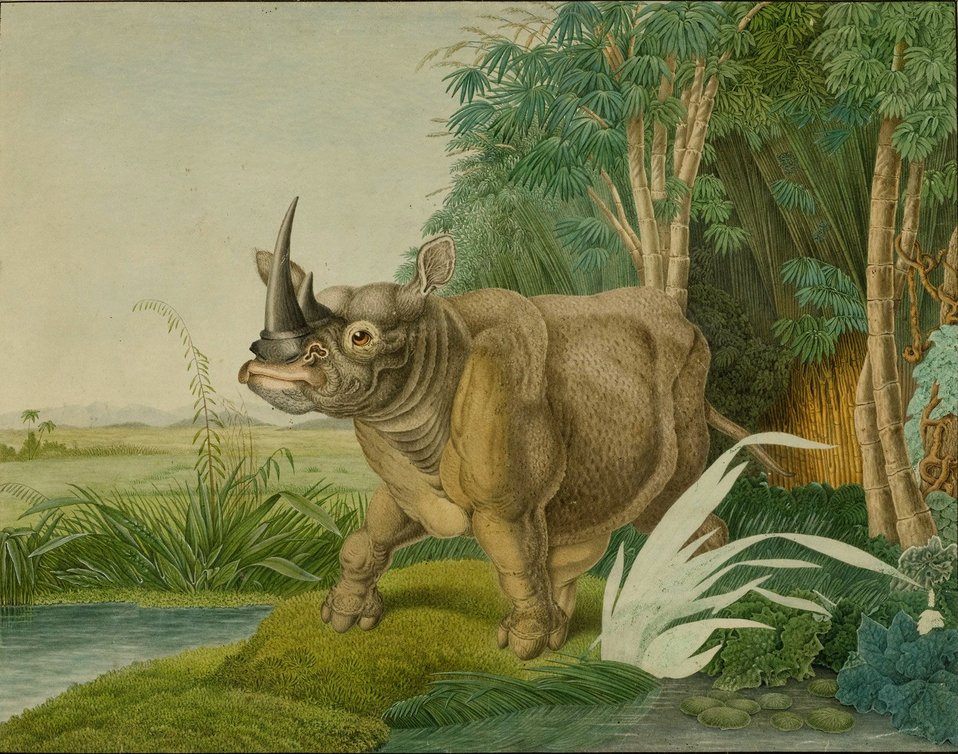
Aloys Zötl - Rhinoceros sinus (1861)